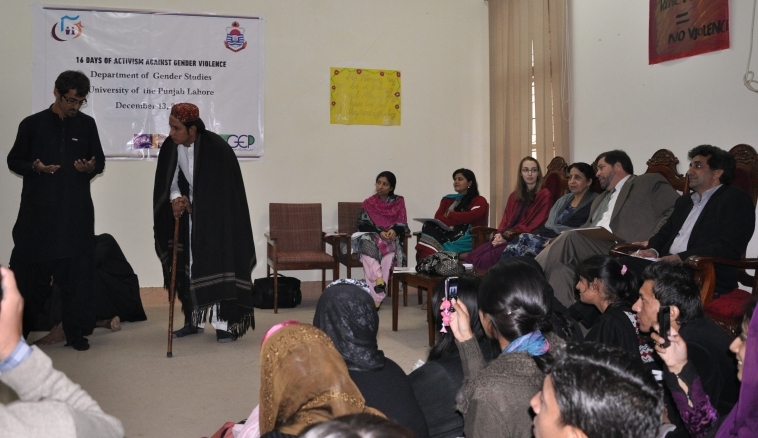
Students of Gender Studies Department of Punjab University performance based on GBV theme.